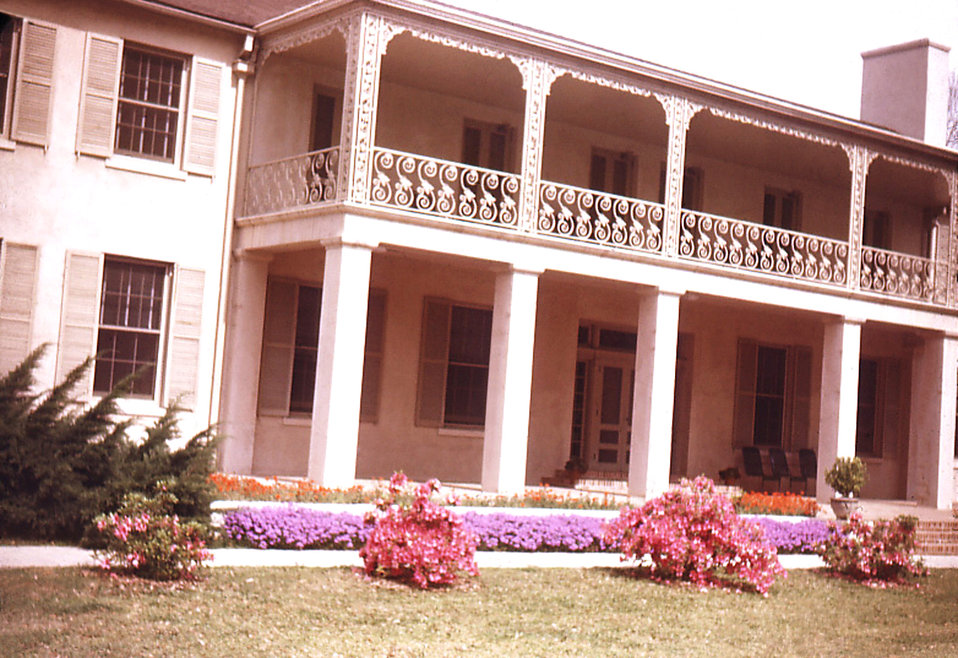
Depicted in this photograph, was the "Sisters' of Charity" quarters, which housed the sisters who were members of the leprosarium staff. In 1896, four Sisters of Charity arrived at the leprosarium, and the staff now numbers 21. The first group of four Sisters of the order founded by St. Vincent de Paul, and officially named Daughters of Charity, arrived at Carville, April 27, 1896, with Sister Beatrice Hart in charge. The sisters volunteered their services, in order to nurse the sufferers of leprosy who'd sought help at the leprosarium. This image was shot when the flowering plants were in full beautiful bloom, (See PHIL 8839).